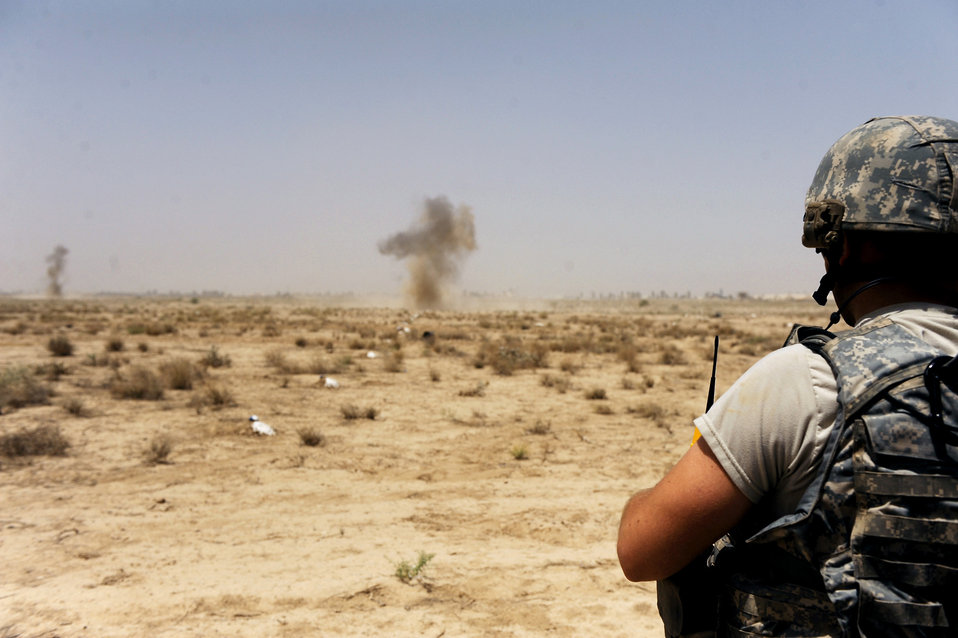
Explosive ordnance Airmen clear the way for Afghan National Army

Staff Sgt. Benjamin Stewart detonates C-4 charges destroying M-42 bomblets littering a field June 4, 2010, in Kandahar City, Afghanistan. Eight teams of Afghan deminers working with the Army Corps of Engineers have uncovered more than 500 munitions including M-42 bomblets, 120 mm rockets, rocket propelled grenades, 105 mm projectiles and 82 mm mortars. Once Afghan de-miners uncover the various munitions, 755th Air Expeditionary Squadron, Operating Location-Bravo explosive ordnance disposal technicians are called in to destroy them. Sergeant Stewart is an explosive ordnance disposal technician assigned to the 755th AES, Operating Location-Bravo EOD team.